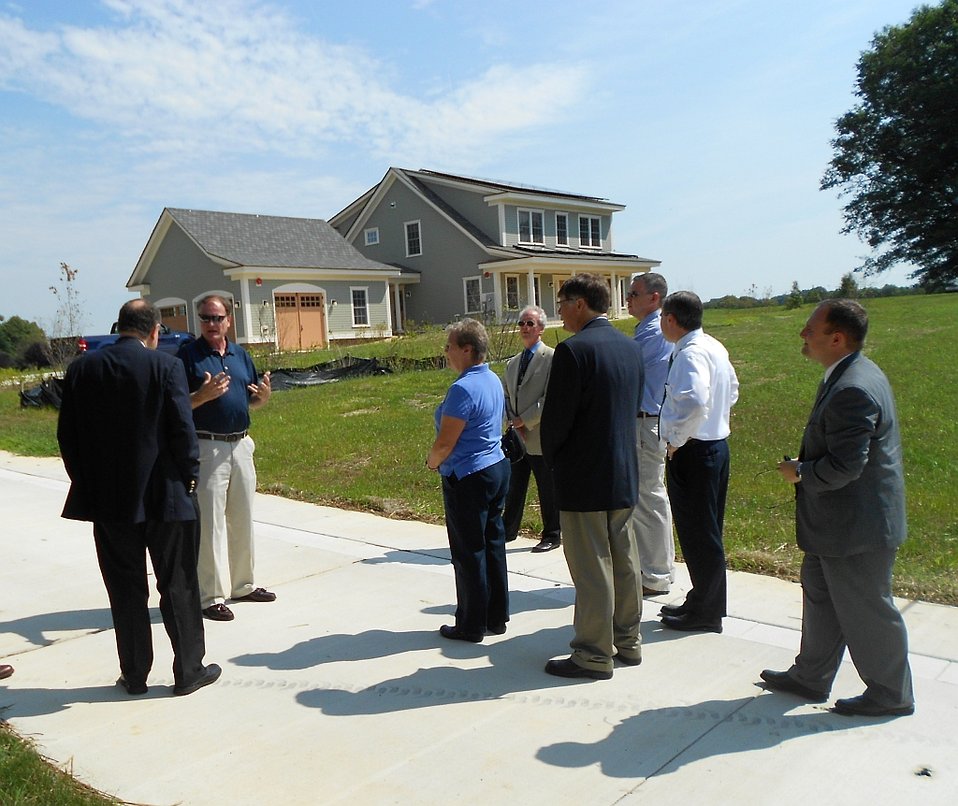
Mayor of Gaithersburg and City Council members Tour NZERTF

Dr. Hunter Fanney (2nd from Left) Chief of the Building Environment Lab in NIST’s Engineer Lab (EL) and EL Lab Deputy Director for Building and Fire Research Dr. William Grosshandler (Center) welcome Gaithersburg Mayor Sidney Katz (Far Left) and Gaithersburg City Council Members to a tour of NIST’s Net Zero Energy Residential Test Facility.